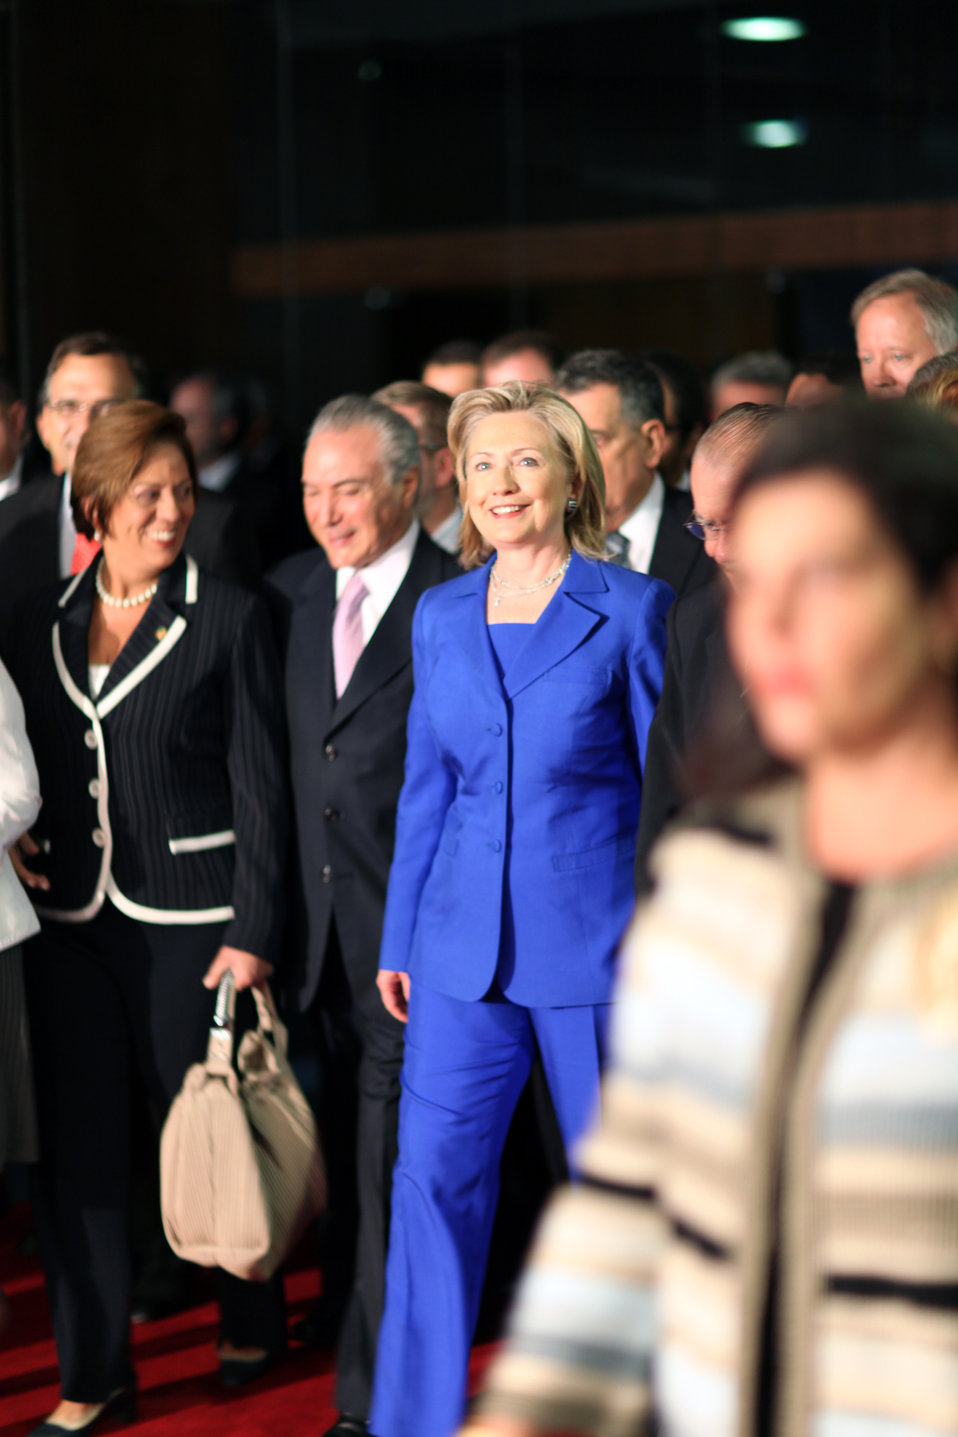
Secretary Clinton Departs a Meeting

U.S. Secretary of State Hillary Rodham Clinton walks out of meeting with the Presidents of its two chambers in Brasilia, Brazil March 3, 2010.